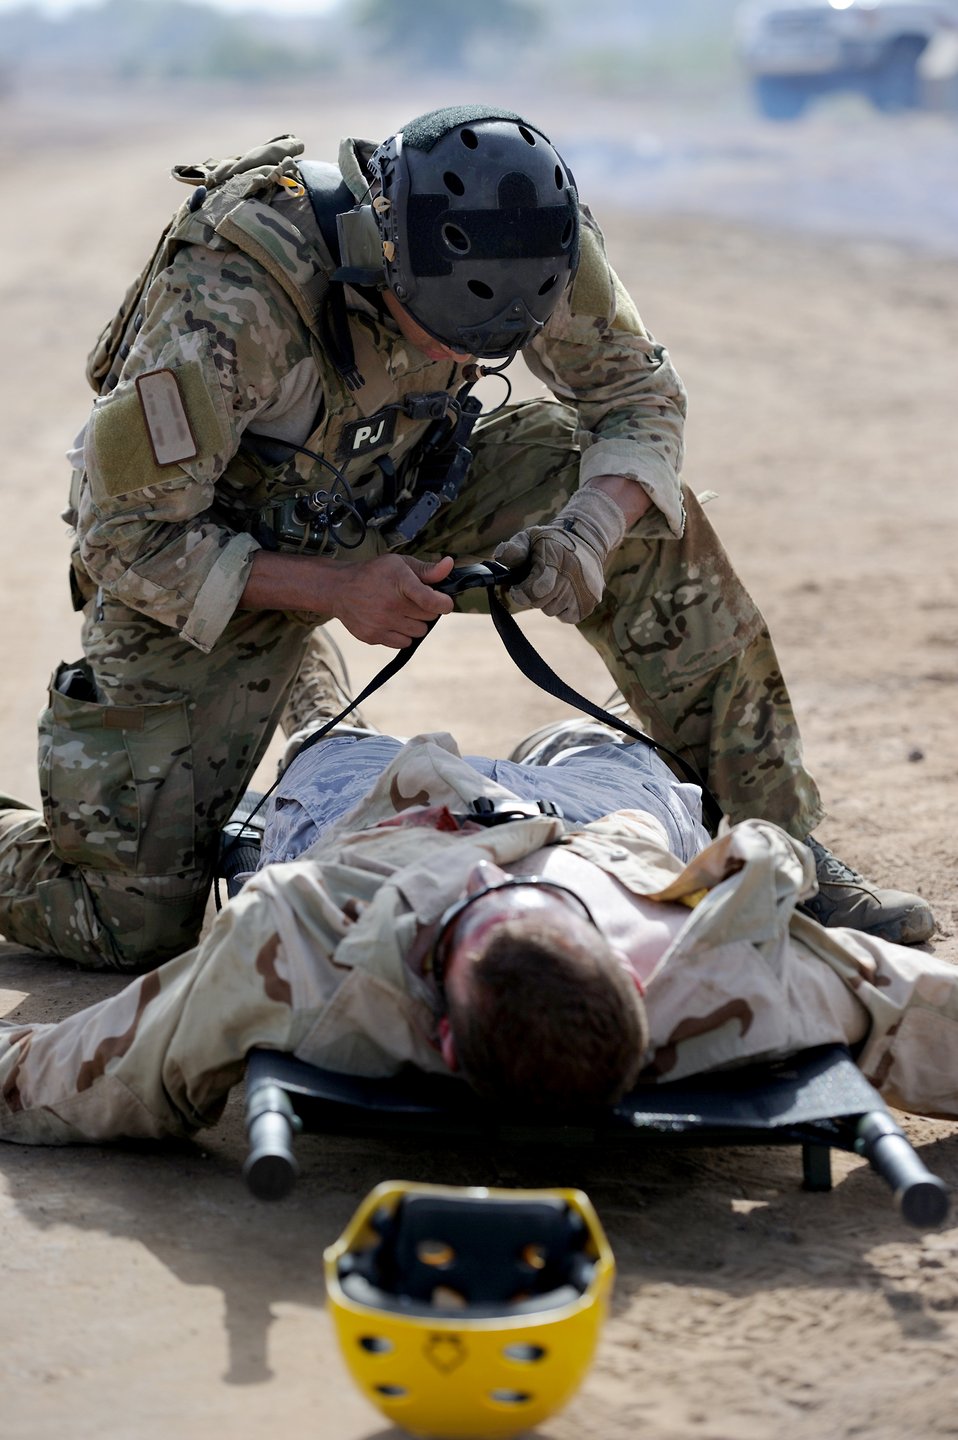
Airmen participate in African rescue exercise

A pararescueman secures a